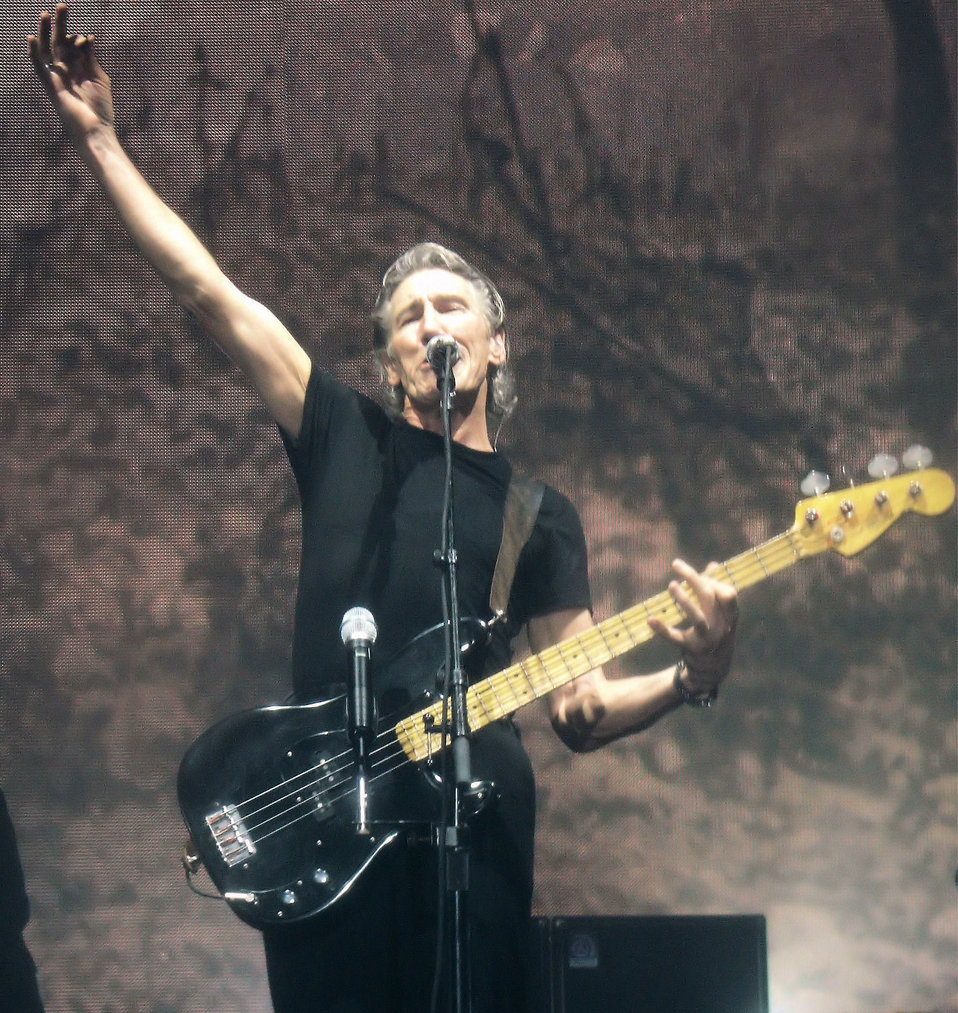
Photo by James Collins, 8 May 2007